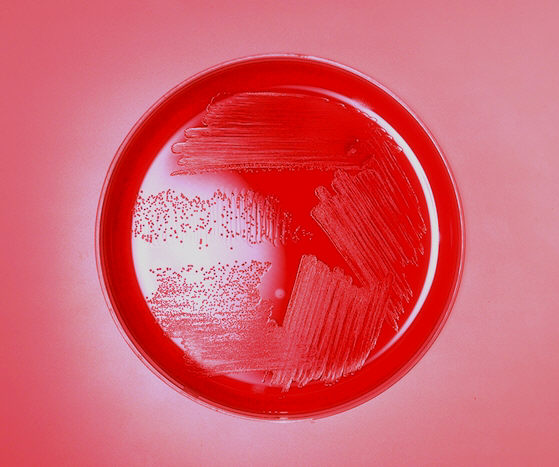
Blood agar plate culture of Haemophilus aegyptius.